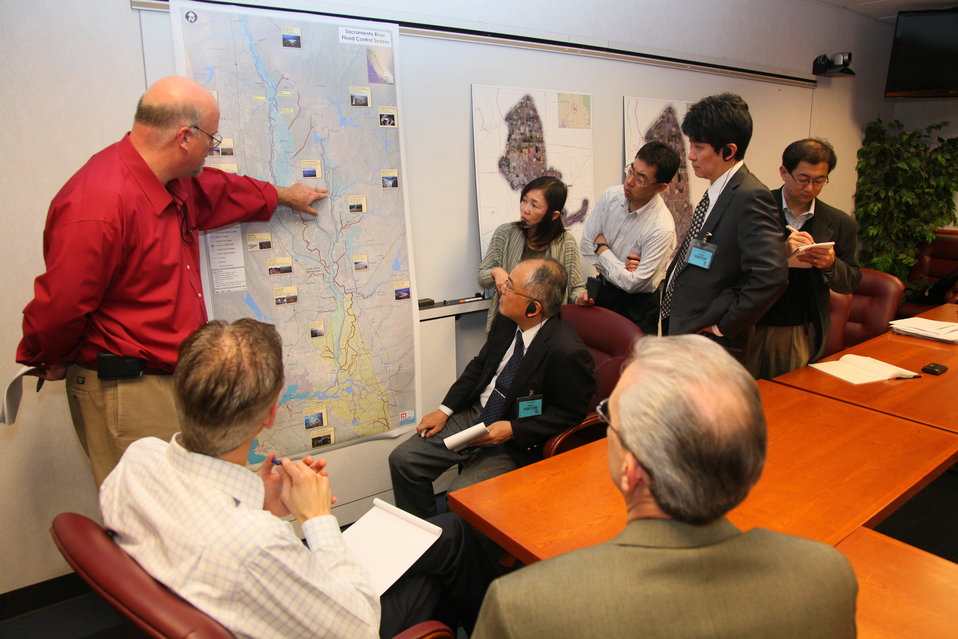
Corps, Japan talk flood risk reduction

Dan Tibbits (left), project manager for the U.S. Army Corps of Engineers Sacramento District, describes Northern California levee improvement projects to Japanese water resources engineers visiting the district’s headquarters in Sacramento, Calif., Feb. 7, 2012. Wakigawa Katsumi (seated center), deputy director of the Japan Institute of Construction Engineering’s water resources division, led the visiting delegates in a fact finding mission to learn about the legal framework for flood plain regulation in the United States. The delegation also visited the Corps’ Hydrologic Engineering Center in Davis.